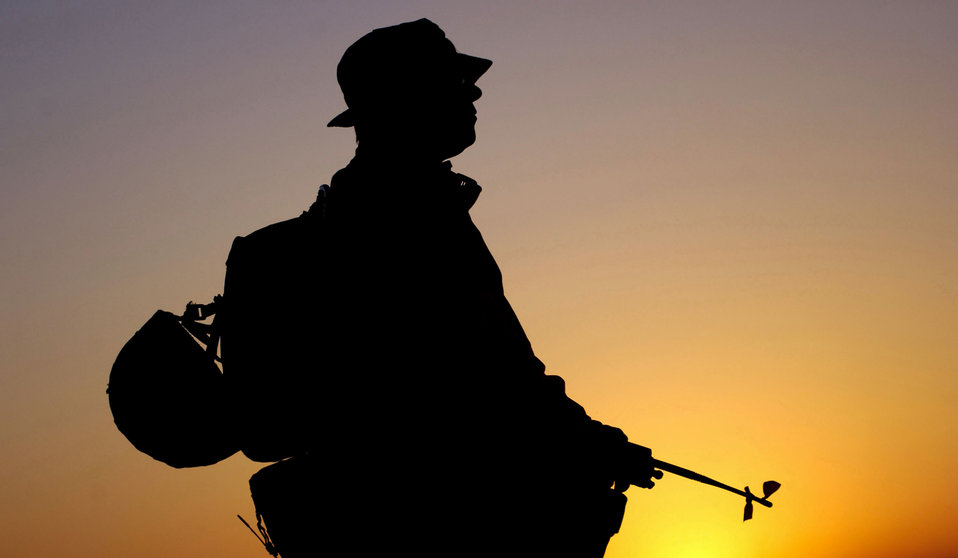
British sunset

OPERATION IRAQI FREEDOM -- A member of the 39 (1 Photo Reconnaissance Unit) Squadron, Royal Air Force, United Kingdom, oversees nightly maintenance as the sun sets on another long day on March 29, 2003. The 39 squadron is deployed from RAF Marham, England, and provides aerial intelligence to coalition forces while operating alongside the 410 Air Expeditionary Wing in a forward deployed location during Operation Iraqi Freedom.